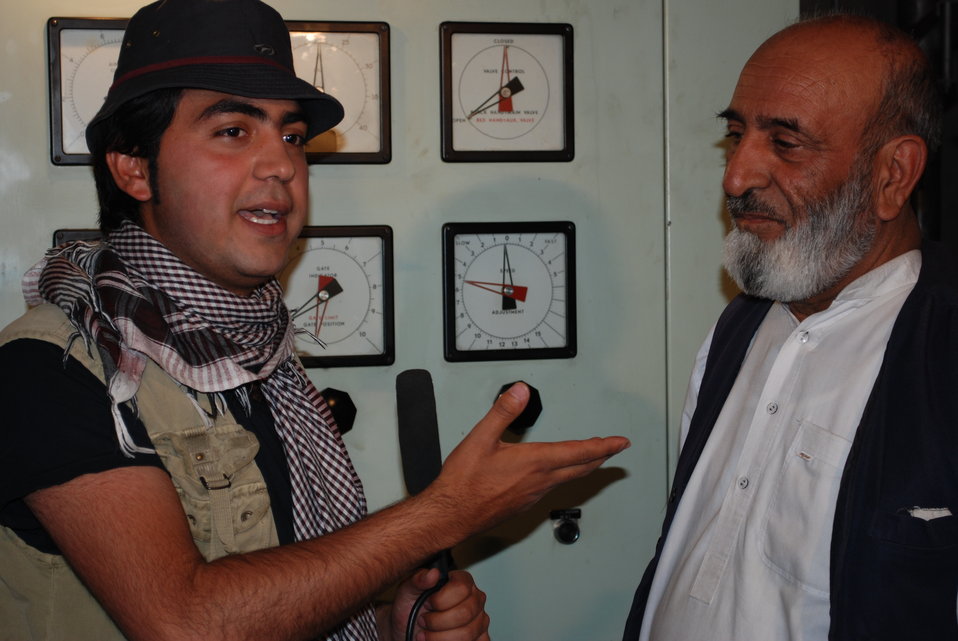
'On the Road' in Kandahar